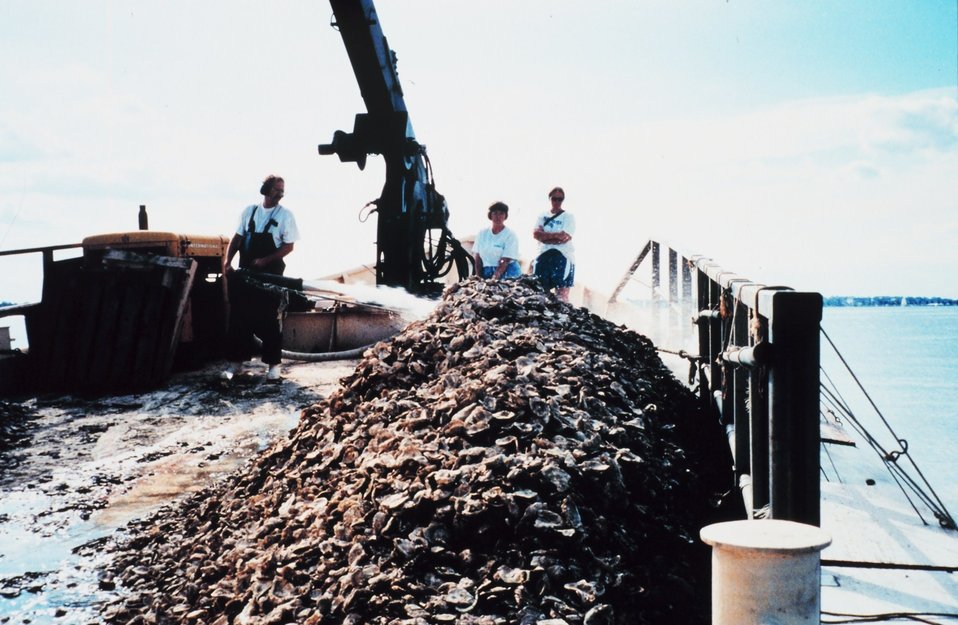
A firehose is employed by the Captain of the ROBERT LEE to spread oyster spat reared by the Oyster Recovery Partnership.